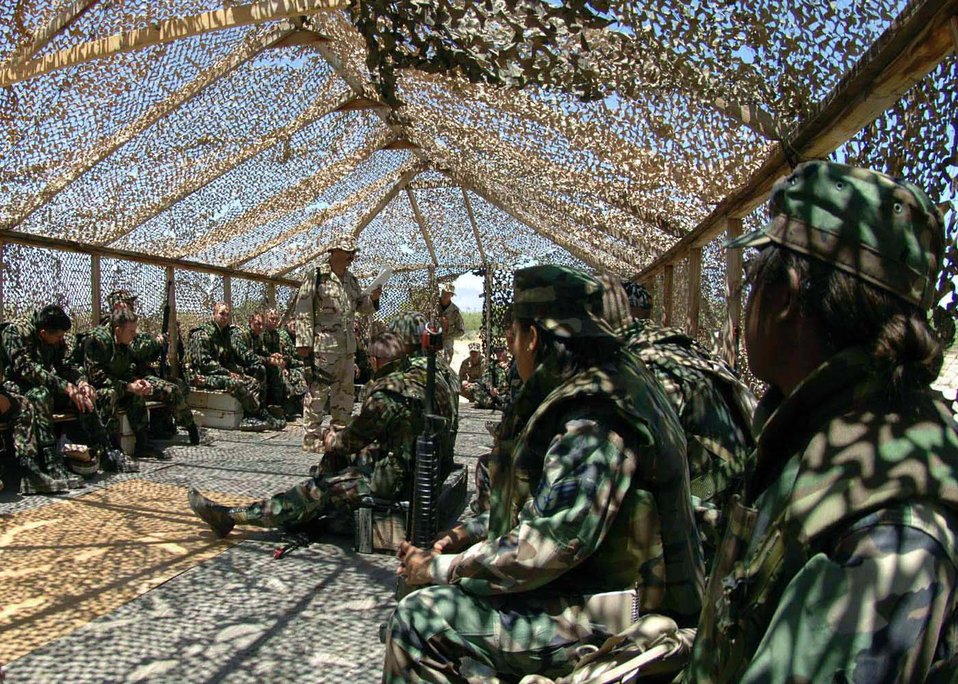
Contingency crawl

DAVIS-MONTHAN AIR FORCE BASE, Ariz. -- Kevin Johnson teaches Airmen about air base defense during a deployment training class here. The training prepares Airmen for deployment and day-to-day life during contingency. Mr. Johnson is assigned to the 355th Security Forces Squadron.